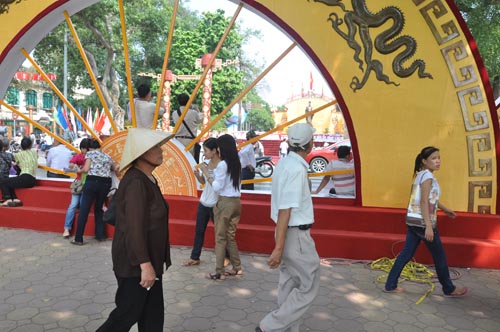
Hanoi celebrates 1,000 years as capital of Vietnam.